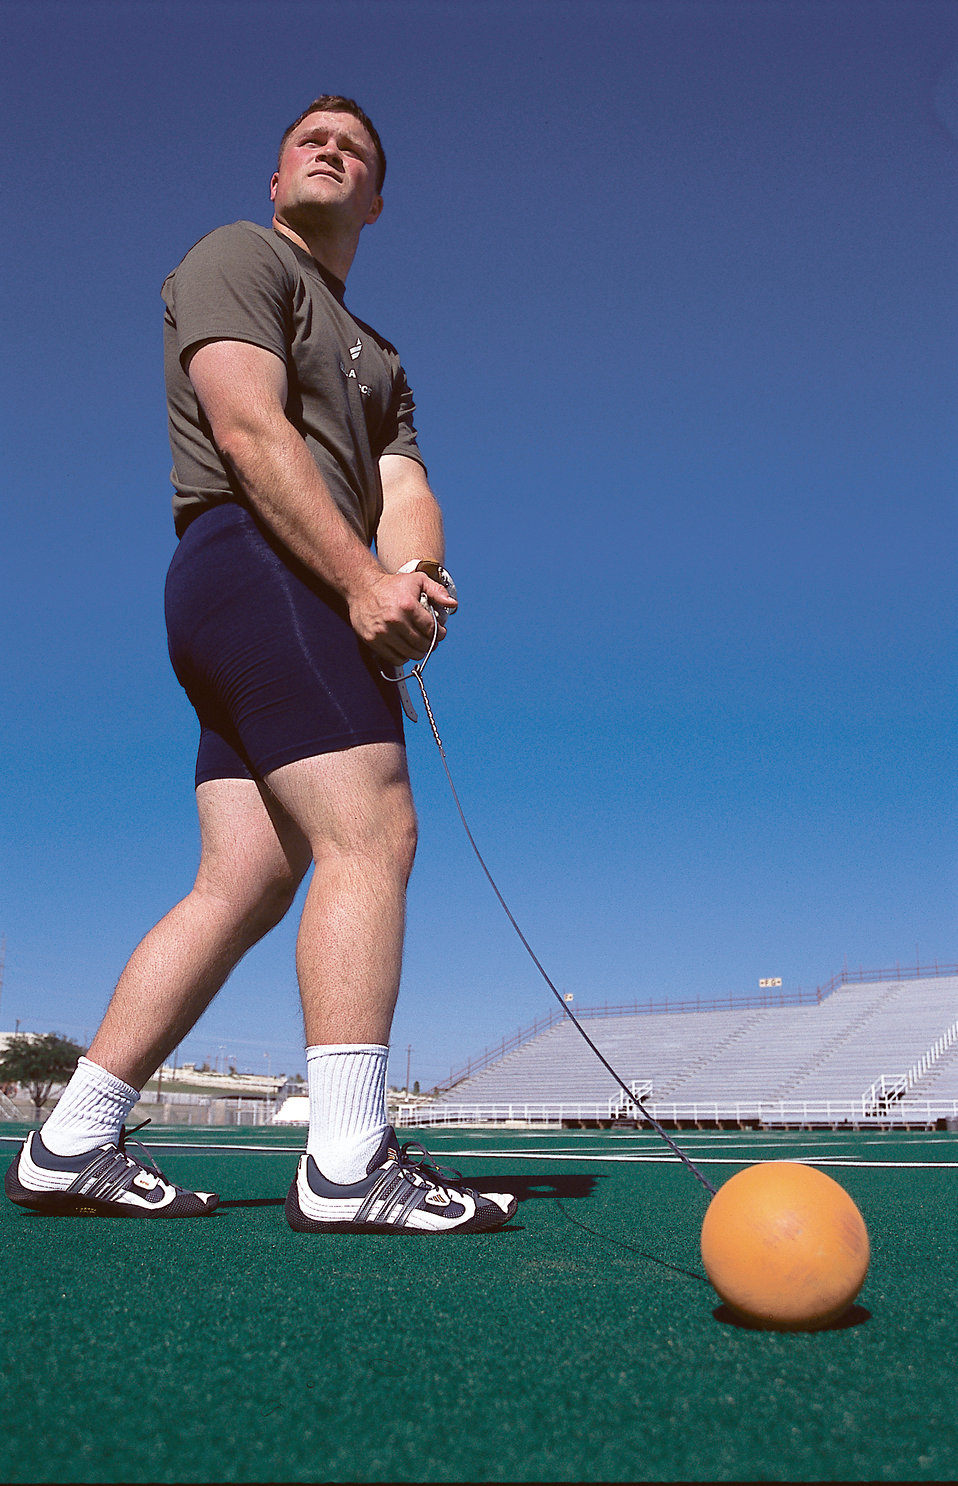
Lieutenant wins national track, field championship

LACKLAND AIR FORCE BASE, Texas -- First Lt. James Parker won the 2004 USA Track and Field Indoor National Championship Weight Throw. The competition took place Feb. 26 to 29 in Boston. Lieutenant Parker participates in the Air Force World Class Athlete Program and is assigned to Malmstrom Air Force Base, Mont.